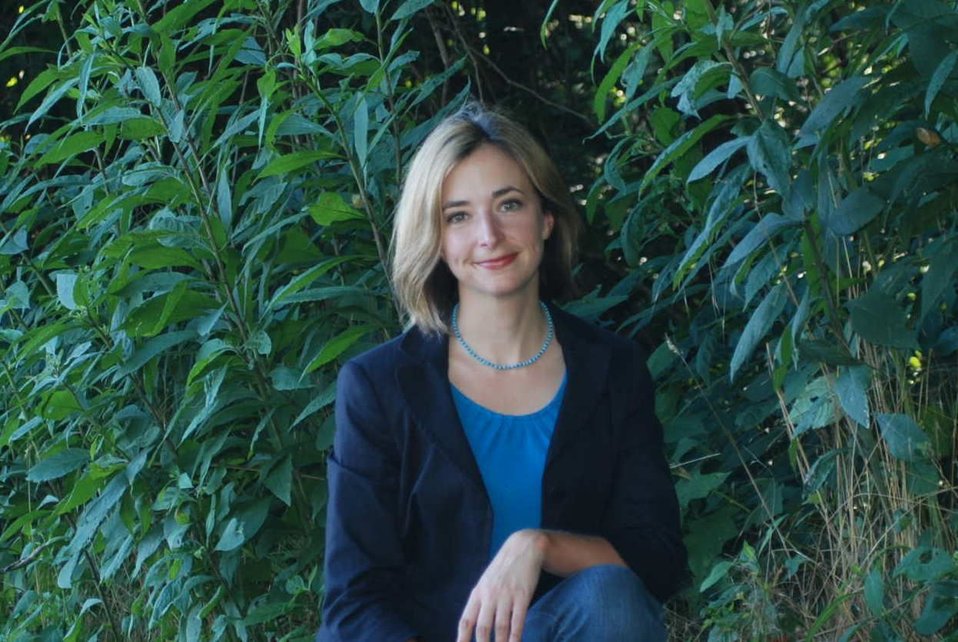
Marcia Pradines

chief, Division of Visitor Services and Communications, National Wildlife Refuge System